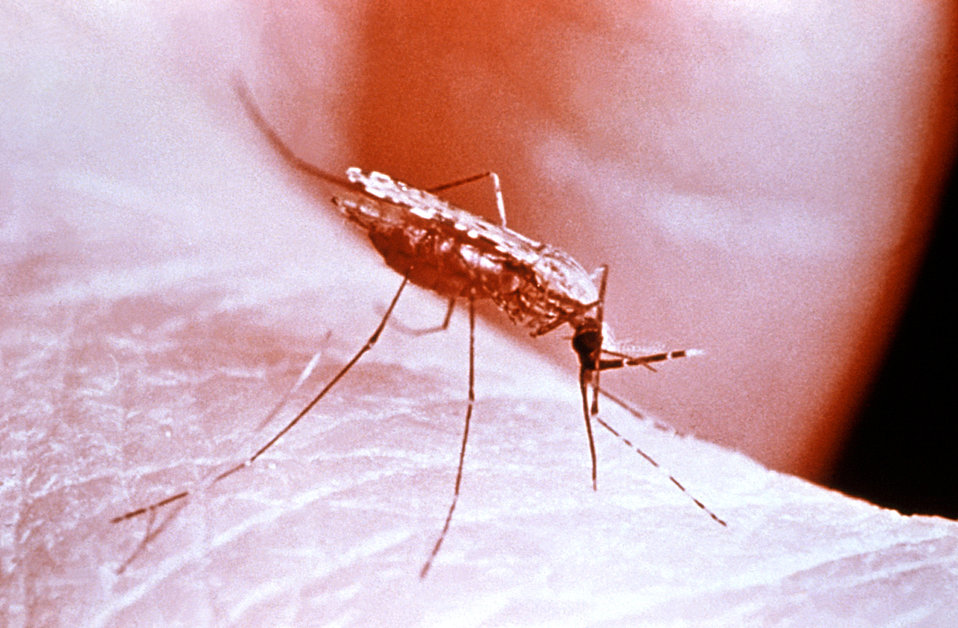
This is an Anopheles gambiae mosquito, which is a known vector for the malarial parasite.